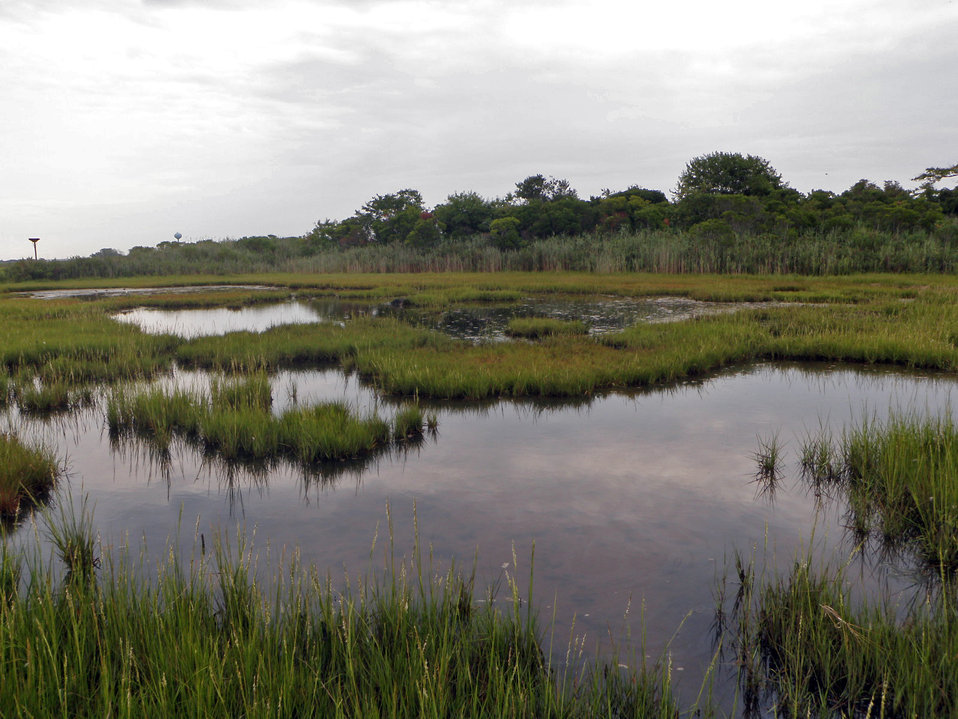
Lido Beach Wildlife Management Area

Lido Beach WMA is part of the Long Island National Wildlife Refuge Complex.